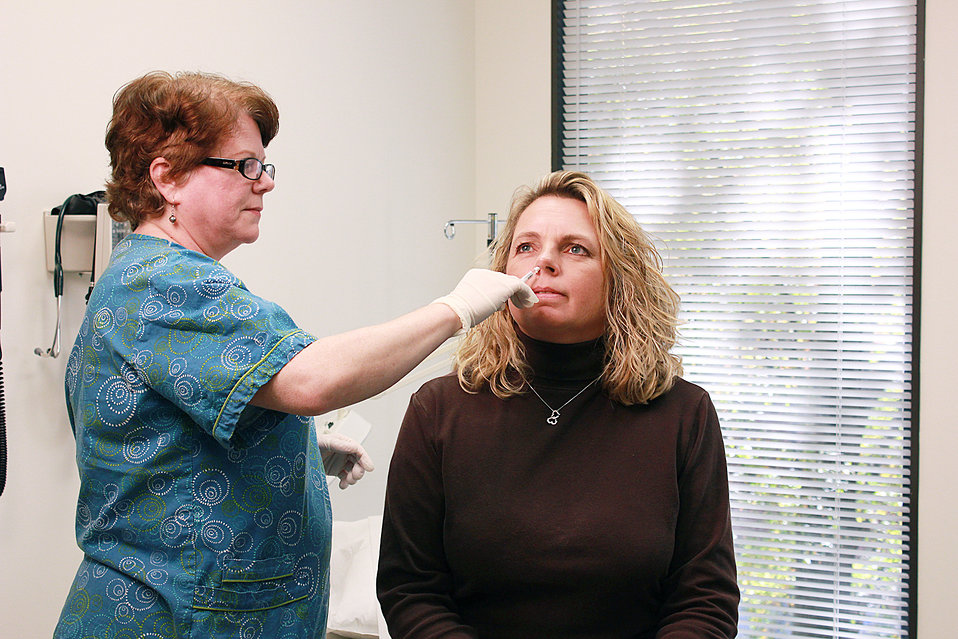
This image depicts a qualified nurse in a clinical setting, who was in the process of administering a dosage of FluMist� live attenuated intranasal vaccine LAIV) into the right nostril, and into this patient's nasal cavity. Note that the nurse's hands were gloved, thereby, avoiding the possibility of cross-contamination.